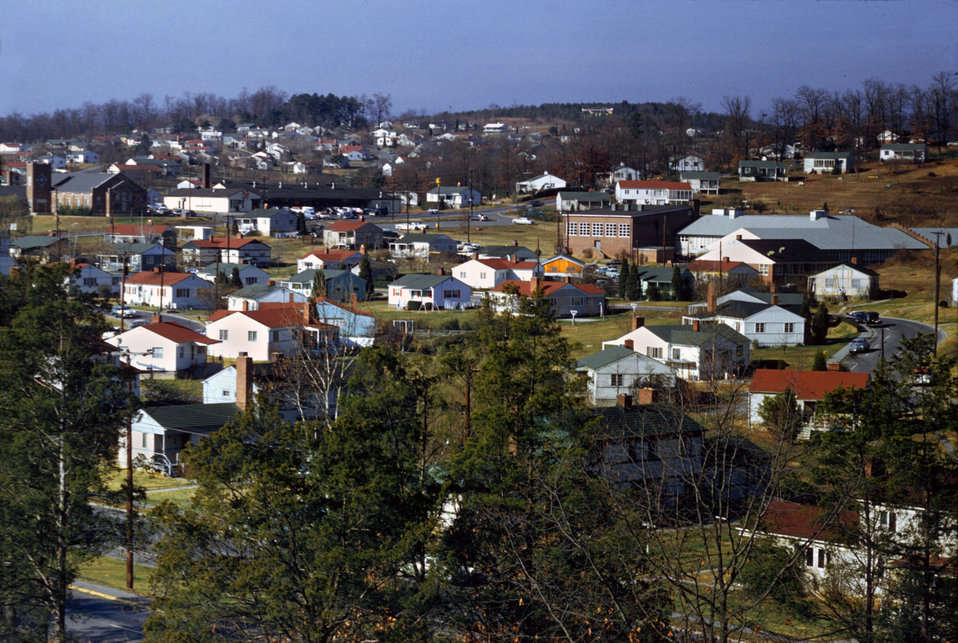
Looking Toward New York Ave Oak Ridge

DOE photo Ed Westcott 1950s Oak Ridge Tennessee